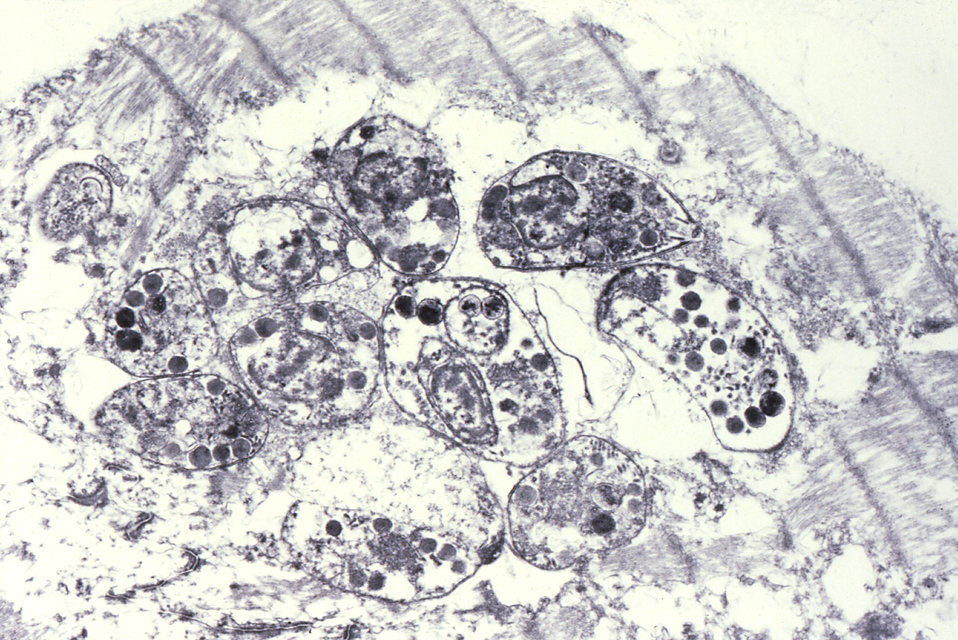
Toxoplasmosis of heart in AIDS. Transmission electron micrograph.